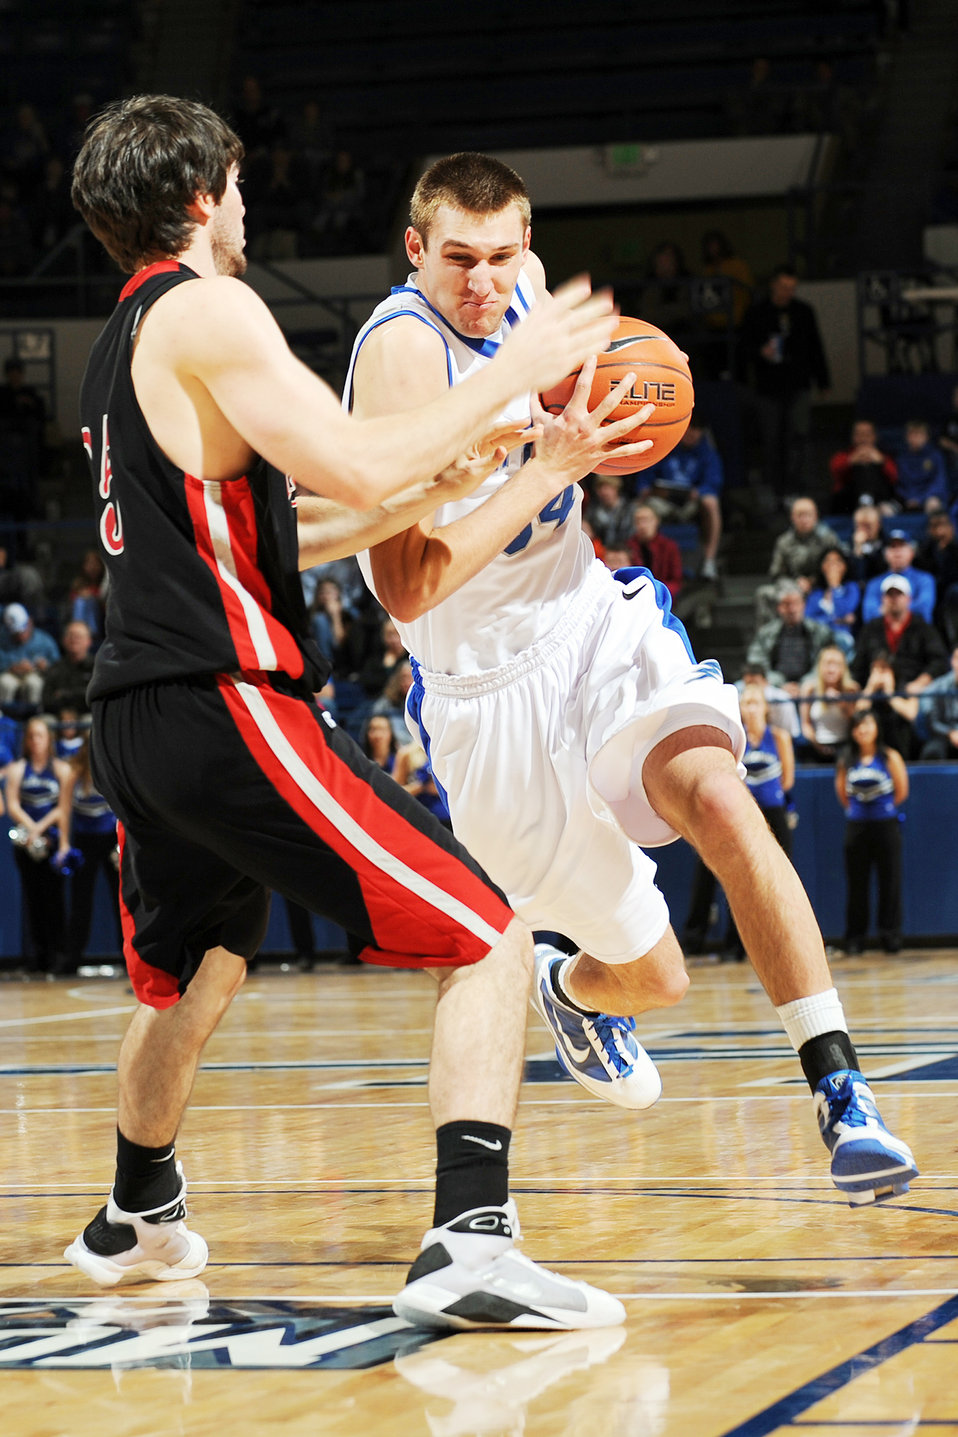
Falcons reign supreme in season opener

Falcon freshman forward Taylor Broekhuis drives the lane against Western States Andrew Zehnder during the season opener Nov. 13, 2009 in Clune Arena at the U.S. Air Force Academy, Colo.. The Falcons beat the Mountaineers 65-54.